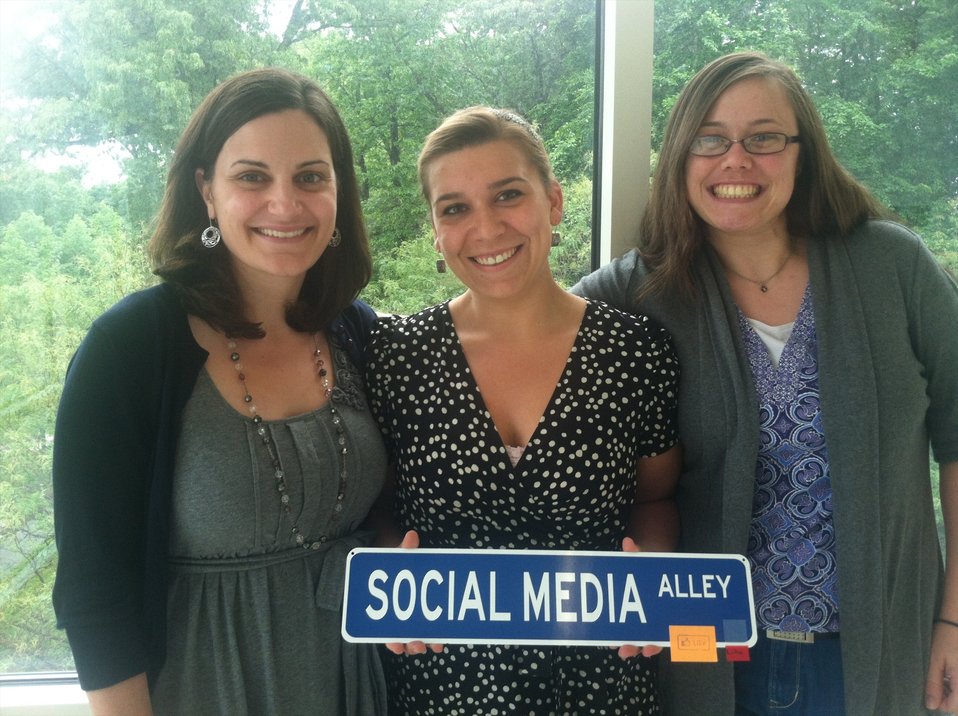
Meredith Doviak (VES), Mary Krakowiak (VES), and Kristen Albrittain (VES) taking a team photo with our new Social Media Alley sign; Location: Archives 2 - outside Suite 3200, College Park, MD